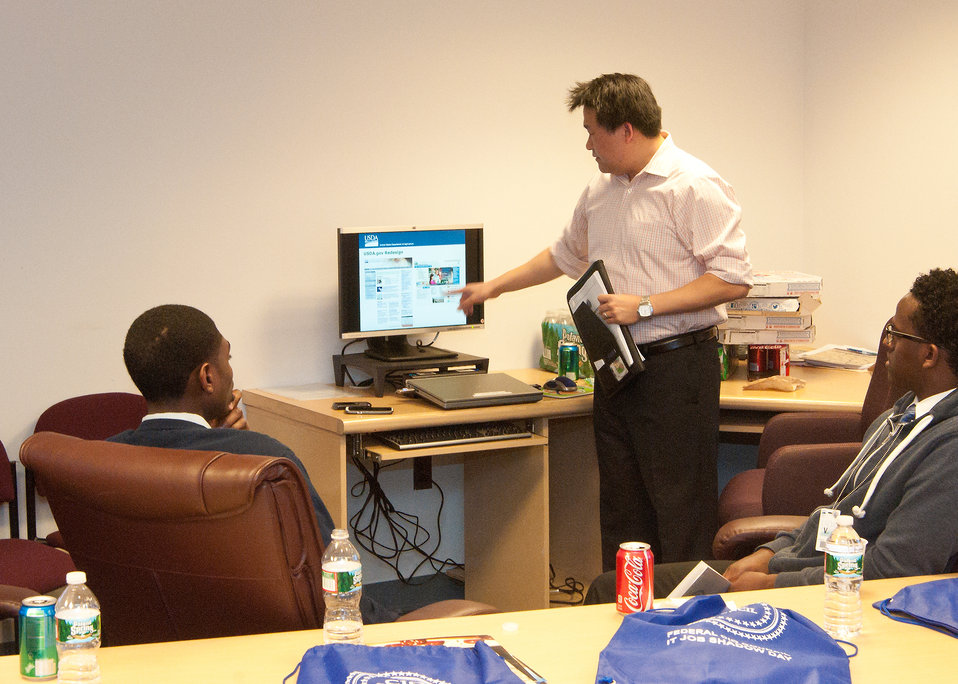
U.S. Department of Agriculture (USDA) Web Communications Digital Media Director Peter Rhee explains web design and strategy to students from Edison Academy in Fairfax, VA during the annual USDA Information Technology (IT) Job Shadow Day held by the Office of Chief Information Officer (OCIO) to introduce local high school students to careers in information technology in Washington, D.C. on Tuesday, Apr. 2, 2013.